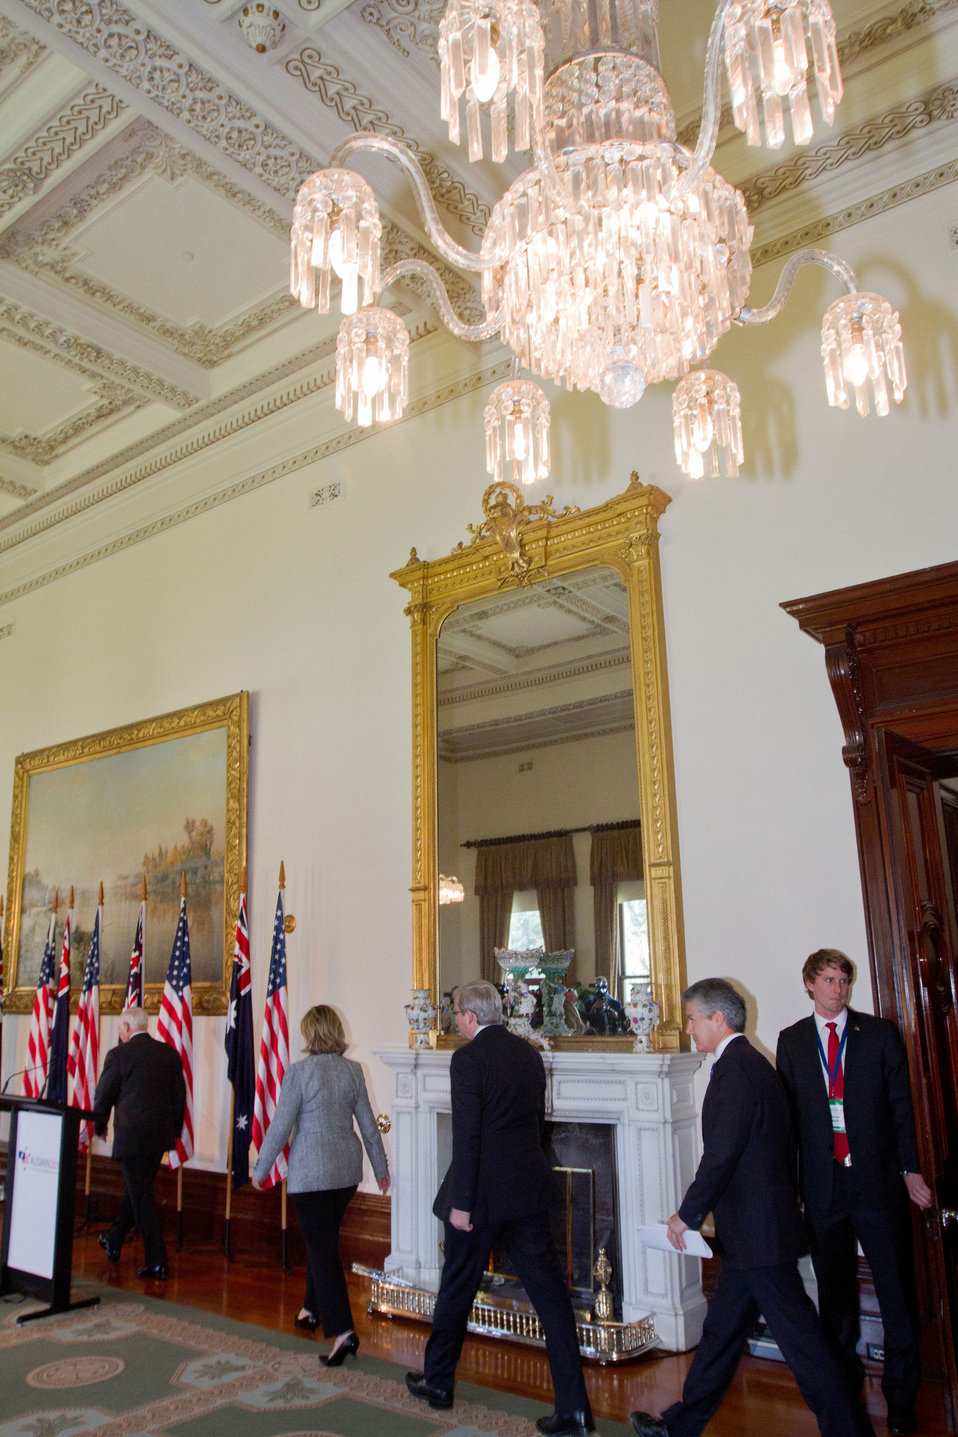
Secretary Gates, Secretary Clinton, Australian Foreign Affairs Minister Rudd, and Austrailan Defense Minister Smith Walk into the Press Conference

U.S. Secretary of Defense Robert Gates, left, U.S. Secretary of State Hillary Rodham Clinton, second from left, Australian Foreign Affairs Minister Kevin Rudd, second from right, and Australian Defense Minister Stephen Smith walk into the press conference after the annual Australia-U.S. Ministerial Consultations (AUSMIN) at the Government House in Melbourne, Australia, on November 8, 2010.